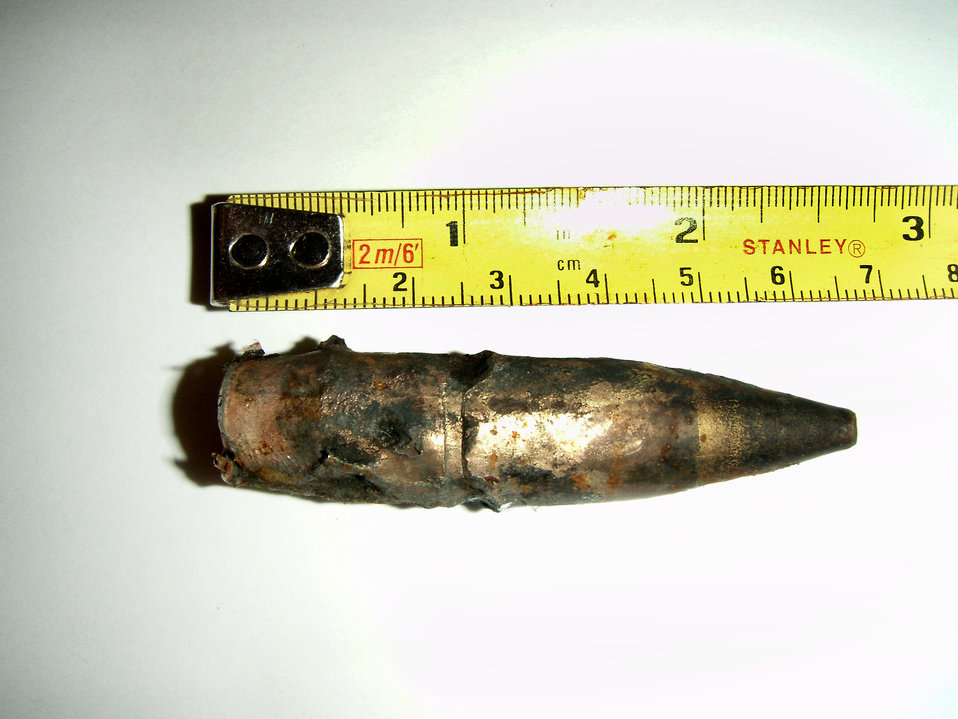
Bagram medics remove unexploded ordnance from patient

This 14.5 mm high explosive incendiary round was removed from the scalp of an Afghan National Army soldier March 18, 2010, at the Craig Joint Theater Hospital, Bagram Airfield, Afghanistan.The injury was sustained during an improvised explosive device attack.